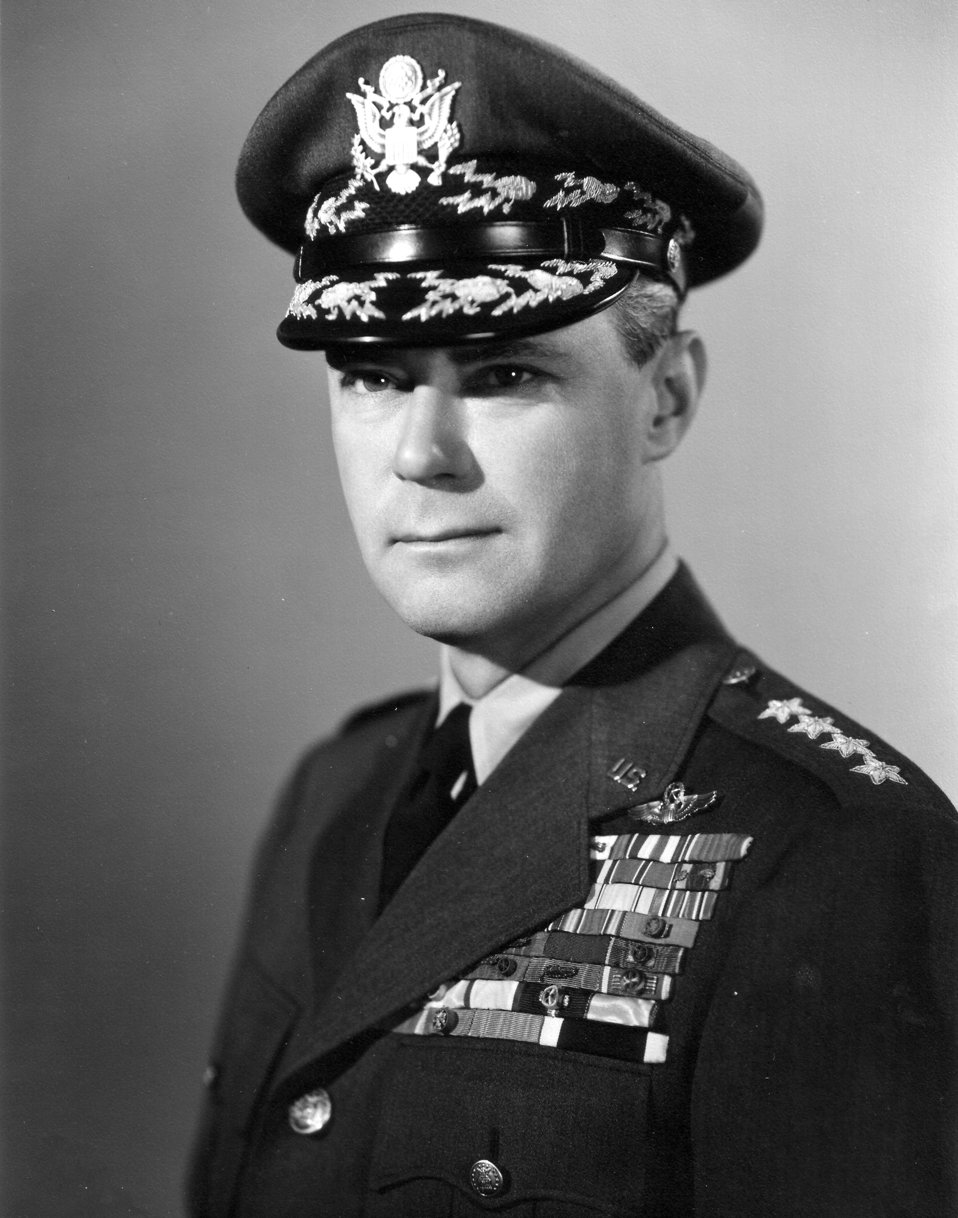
Hoyt S. Vandenberg